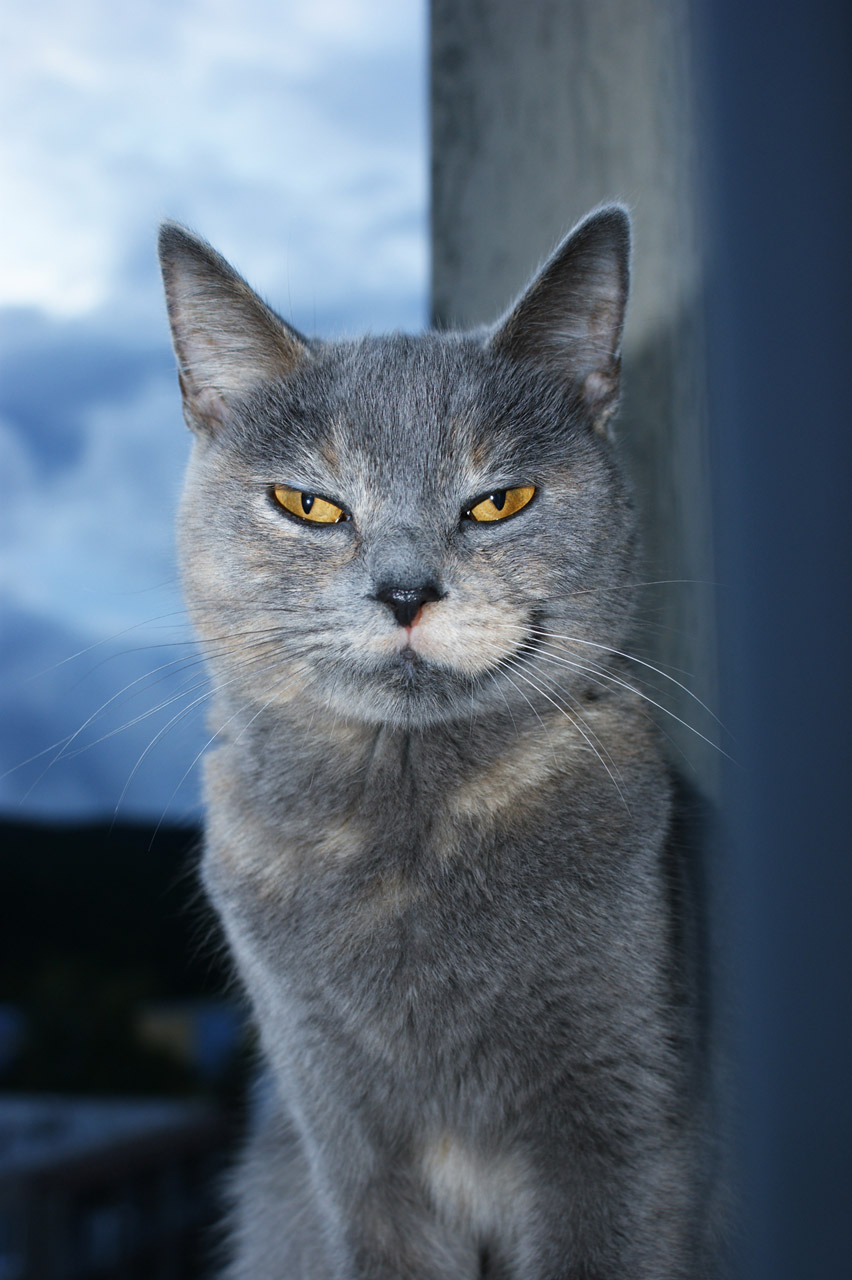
Cat on a windowsill in the evening.